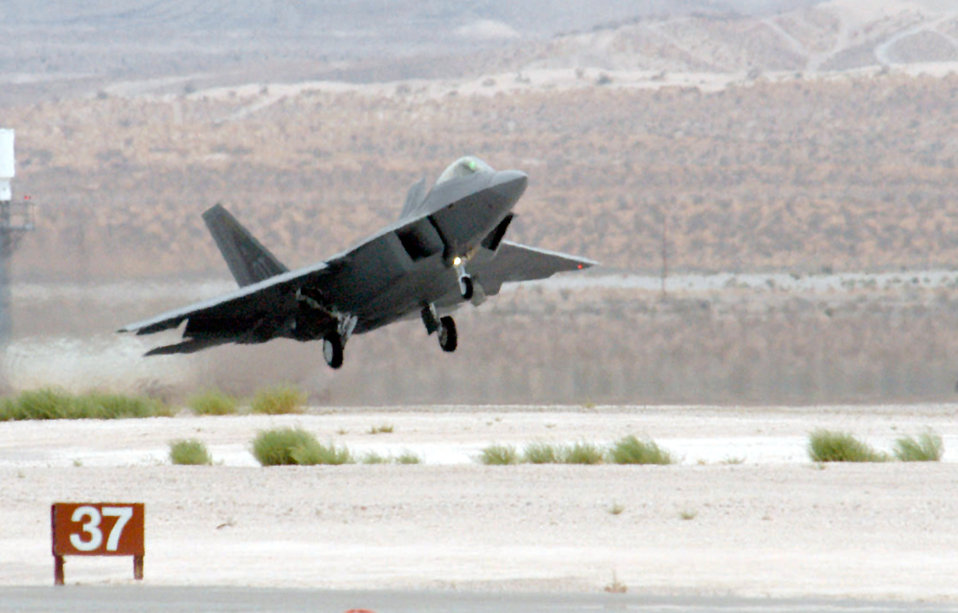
Raptor lift off

NELLIS AIR FORCE BASE, Nev. -- Lt. Col. Jeffrey Harrigian lifts off here during his first flight in an F/A-22 Raptor. He commands the 43rd Fighter Squadron at Tyndall Air Force Base, Fla. The 43rd FS will be the Air Force's first F/A-22 squadron. As the Raptor continues operational tests and evaluations in Nevada, officials plan to train a cadre of pilots from Tyndall to be the initial flight instructors.